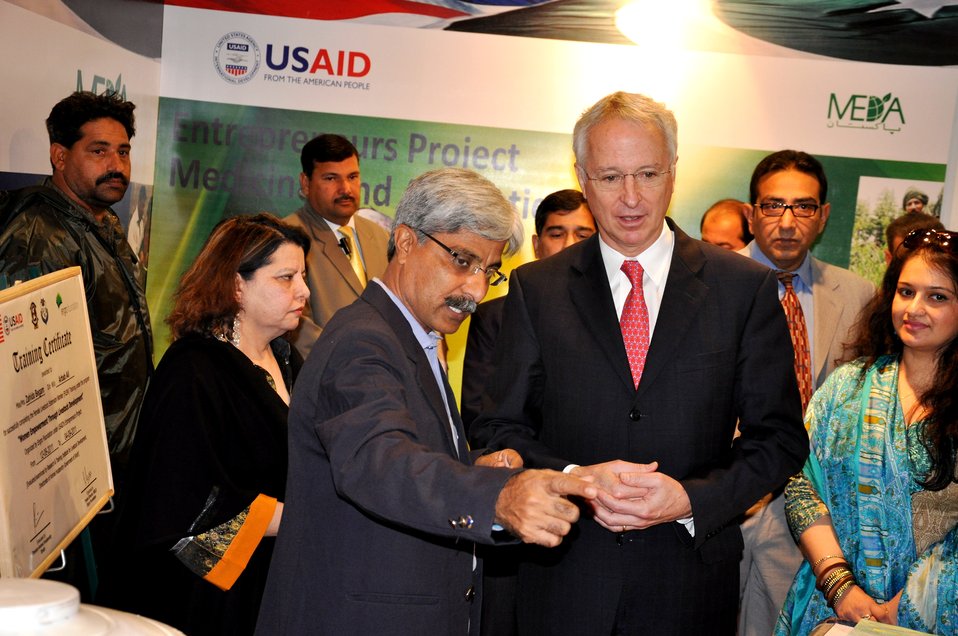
US Ambassador Cameron Munter at the Entrepreneurs project stall